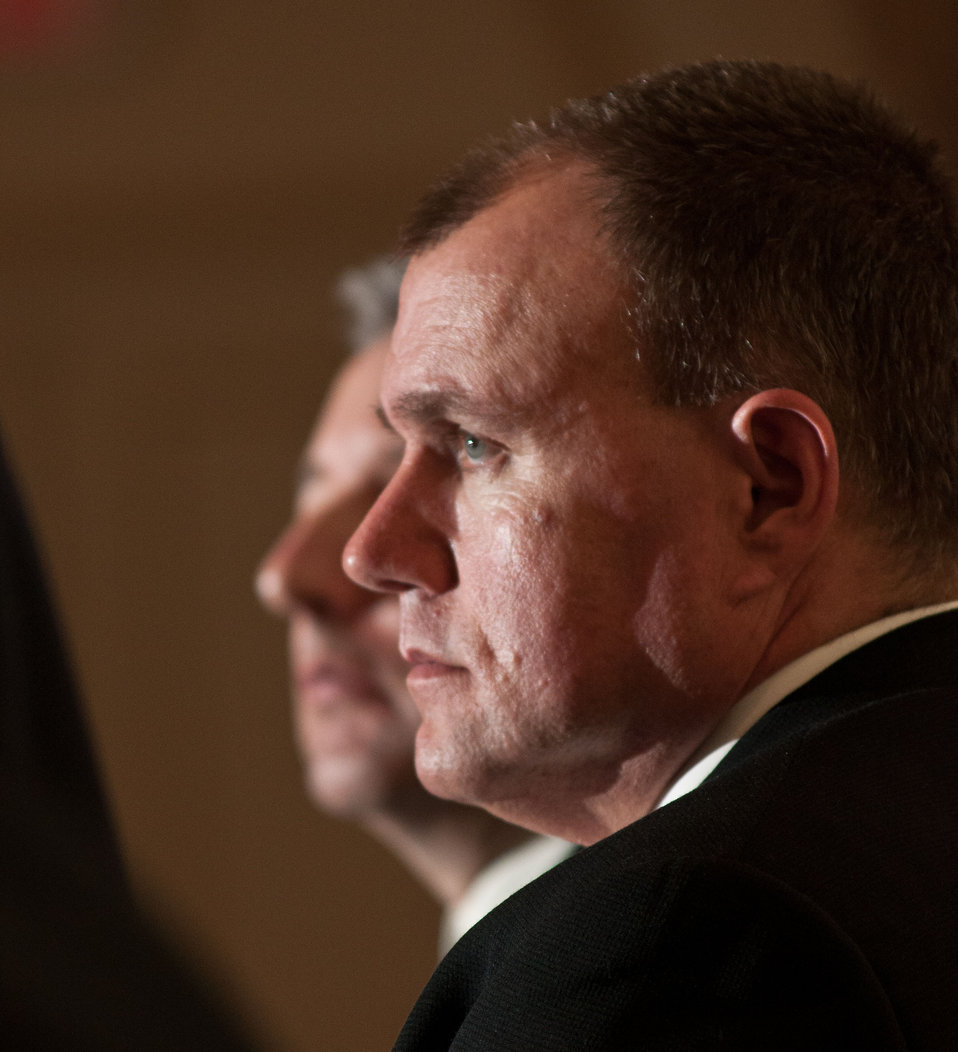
The U.S. Department of Agriculture (USDA) National Agricultural Statistics Service (NASS), Spatial Analysis Research Section Head Rick Mueller, presented VegScape: A NASS Web Service-based U.S. Crop Condition Monitoring System, during the 2013 Agricultural Outlook Forum was held at the Crystal Gateway Marriott Hotel in Arlington, VA on Friday, Feb. 22, 2013. The system is a new vegetation condition portal called VegScape, which delivers Web-service based interactive vegetation indices that enable quantification of U.S. crop conditions for exploring, visualizing, querying, and disseminating via interactive maps. Vegetation indices like NDVI (Normalized Difference Vegetation Index), and mean, median, and ratio comparisons to prior years are constructed for analytical purposes and on-demand crop statistics. The breakout session generally focused on the Weather Outlook for 2013. The presentation is available at www.usda.gov/oce/forum/presentations/Mueller.pptx.